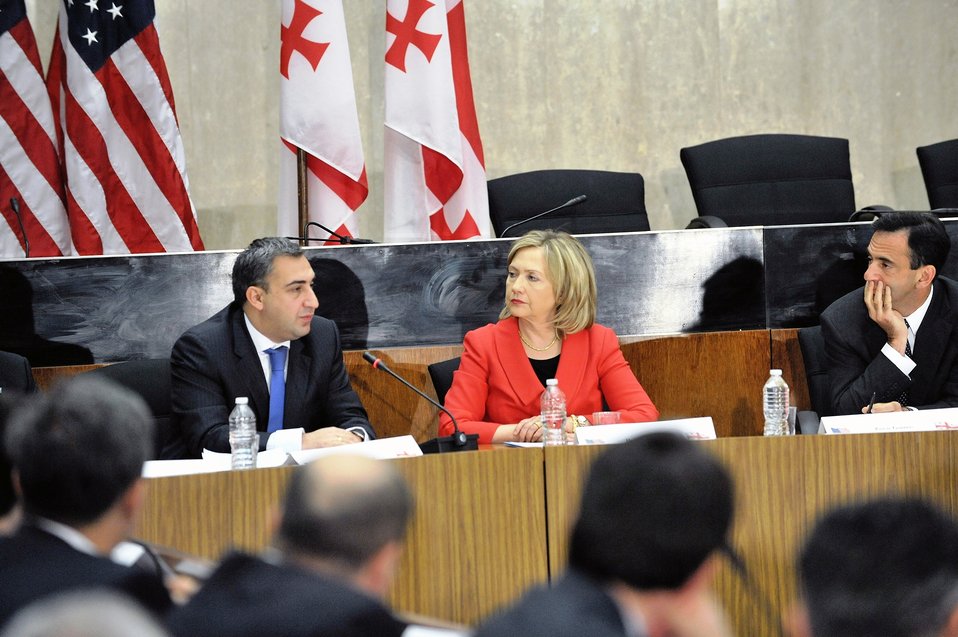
Secretary Clinton and Georgian Prime Minister Gilauri Deliver Remarks

U.S. Secretary of State Hillary Rodham Clinton and Georgian Prime Minister Nikoloz Gilauri deliver the opening remarks at the U.S.-Georgia Charter on Strategic Partnership Omnibus Meeting at the U.S. Department of State in Washington, D.C., October 6, 2010.